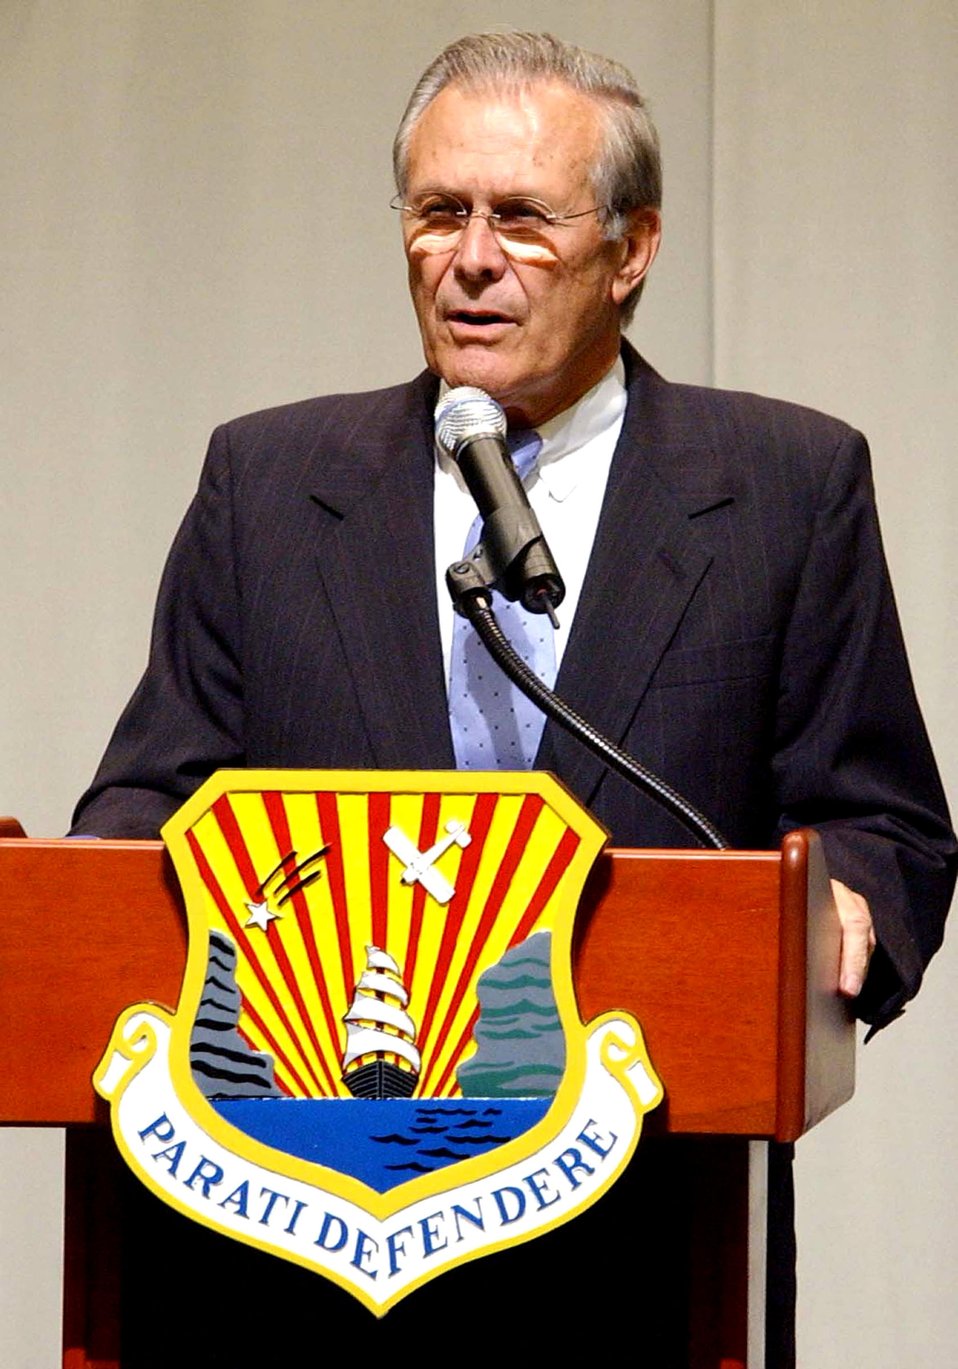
SECDEF visit

MACDILL AIR FORCE BASE, Fla. -- Defense Secretary Donald H. Rumsfeld addresses questions during a town-hall meeting at the Davis Conference Center here. He answered questions on issues from hurricane relief to the global war on terrorism. The secretary was at the base Oct. 11 to visit servicemembers and the staff at U.S. Central Command and U.S. Special Operations Command.